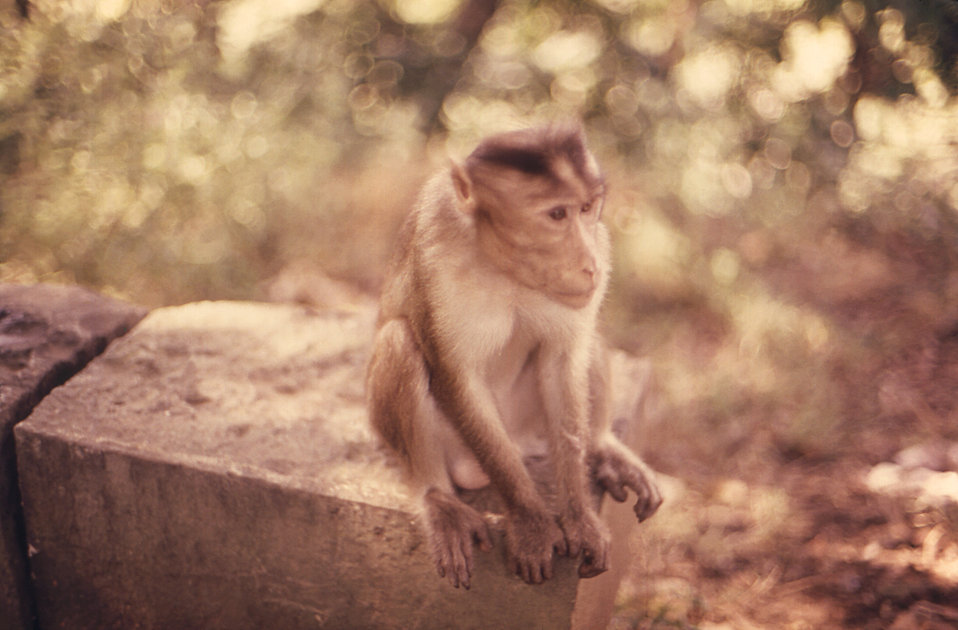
The rhesus monkey, Macaca mulatta, photographed here was perched atop a rock wall somewhere in northern India during a 1974 trip made by Centers for Disease Control (CDC) personnel to that region.